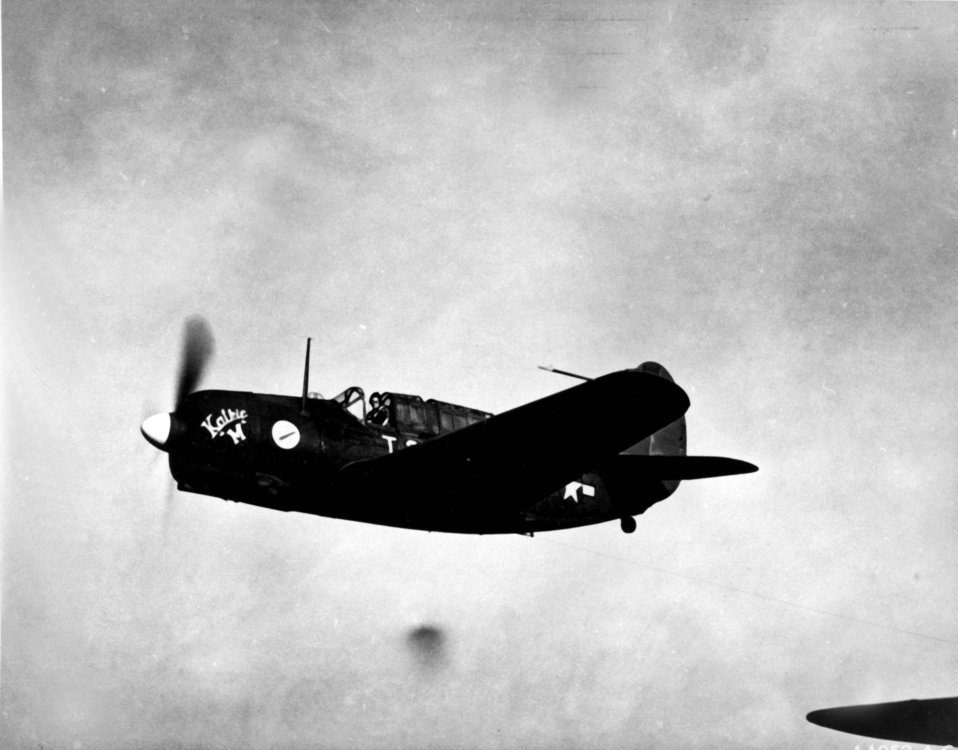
Helen W. Snapp

1940's -- Helen W. Snapp (WASP), Washington, D.C., low-target Squadron, Camp Stewart, Georgia, June 1944.